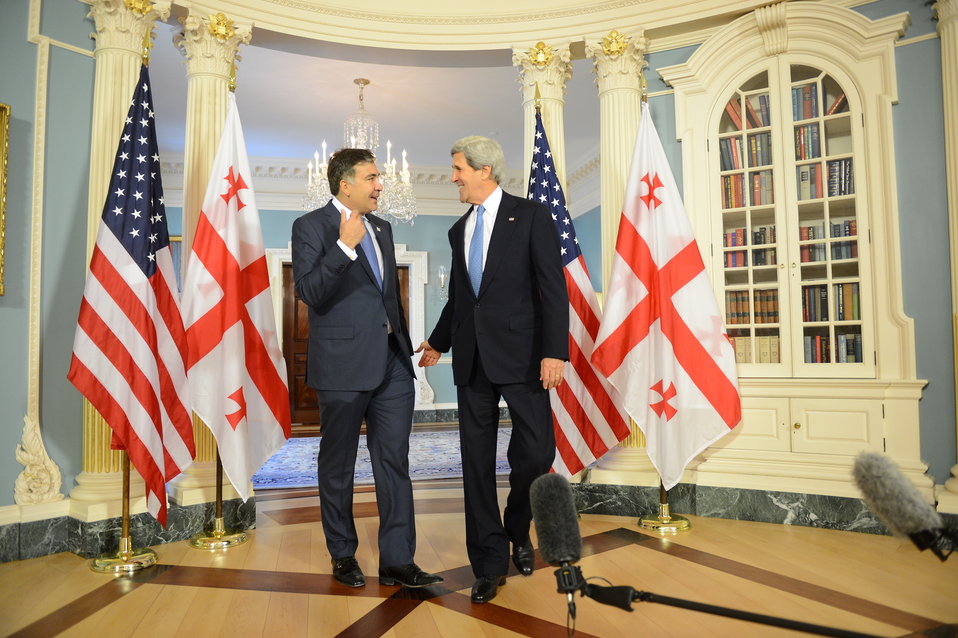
Secretary Kerry Meets With Georgian President Saakashvili

U.S. Secretary of State John Kerry meets with Georgian President Mikheil Saakashvili at the U.S. Department of State in Washington, D.C., on May 1, 2013.